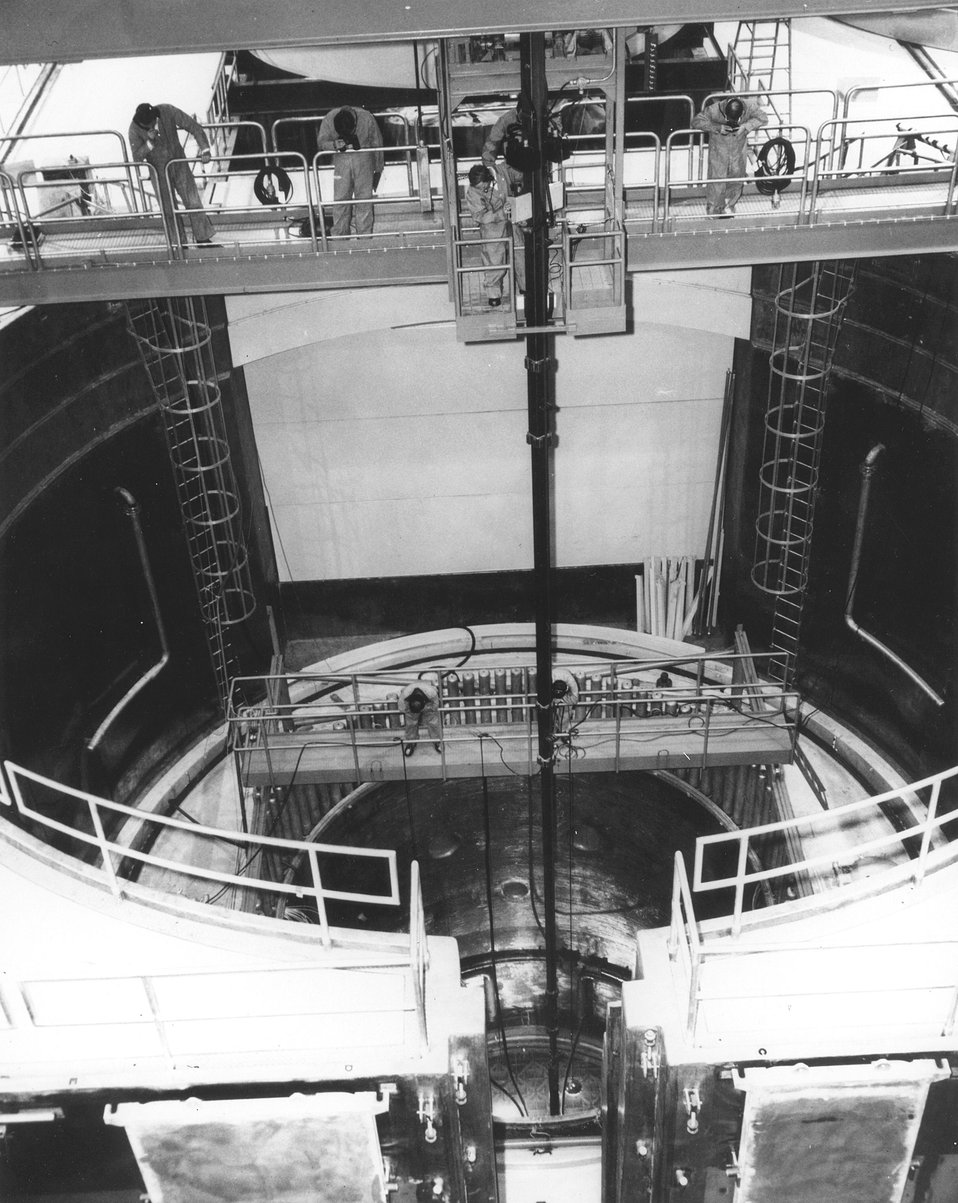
Operators at Commonwealth Edison Company's Dresden nuclear power station near Morris, Illinois, guide a fuel assembly into the plant's Unit 2 reactor. c. 1970